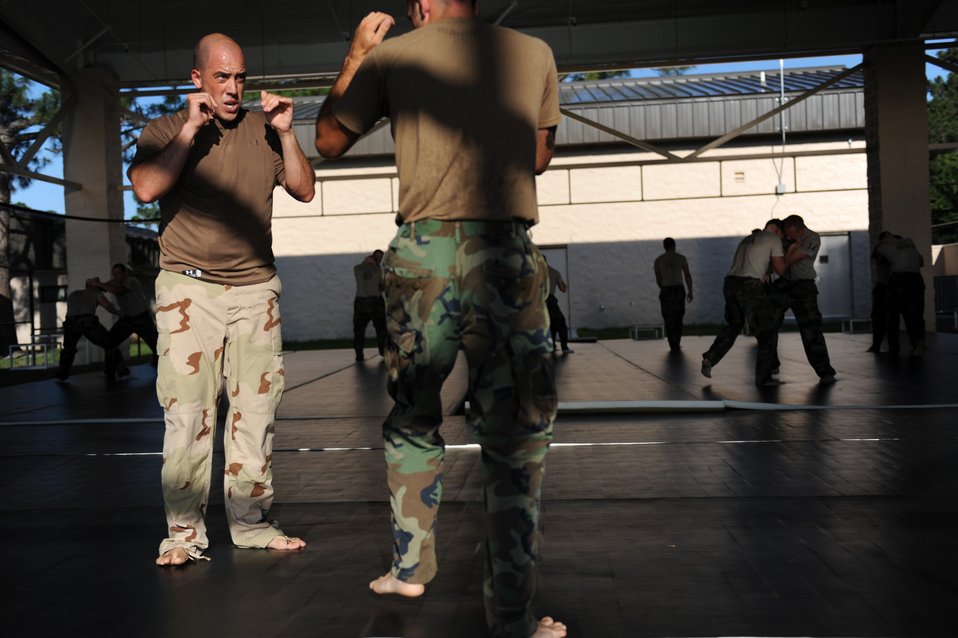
UFC fighter helps train battlefield Airmen

Master Sgt. John Sosa fights Senior Airman Patrick Murphy during a combative class taught by Ultimate Fighting Championship Middleweight Alan Belcher June 8, 2010, at Hurlburt Field, Fla.